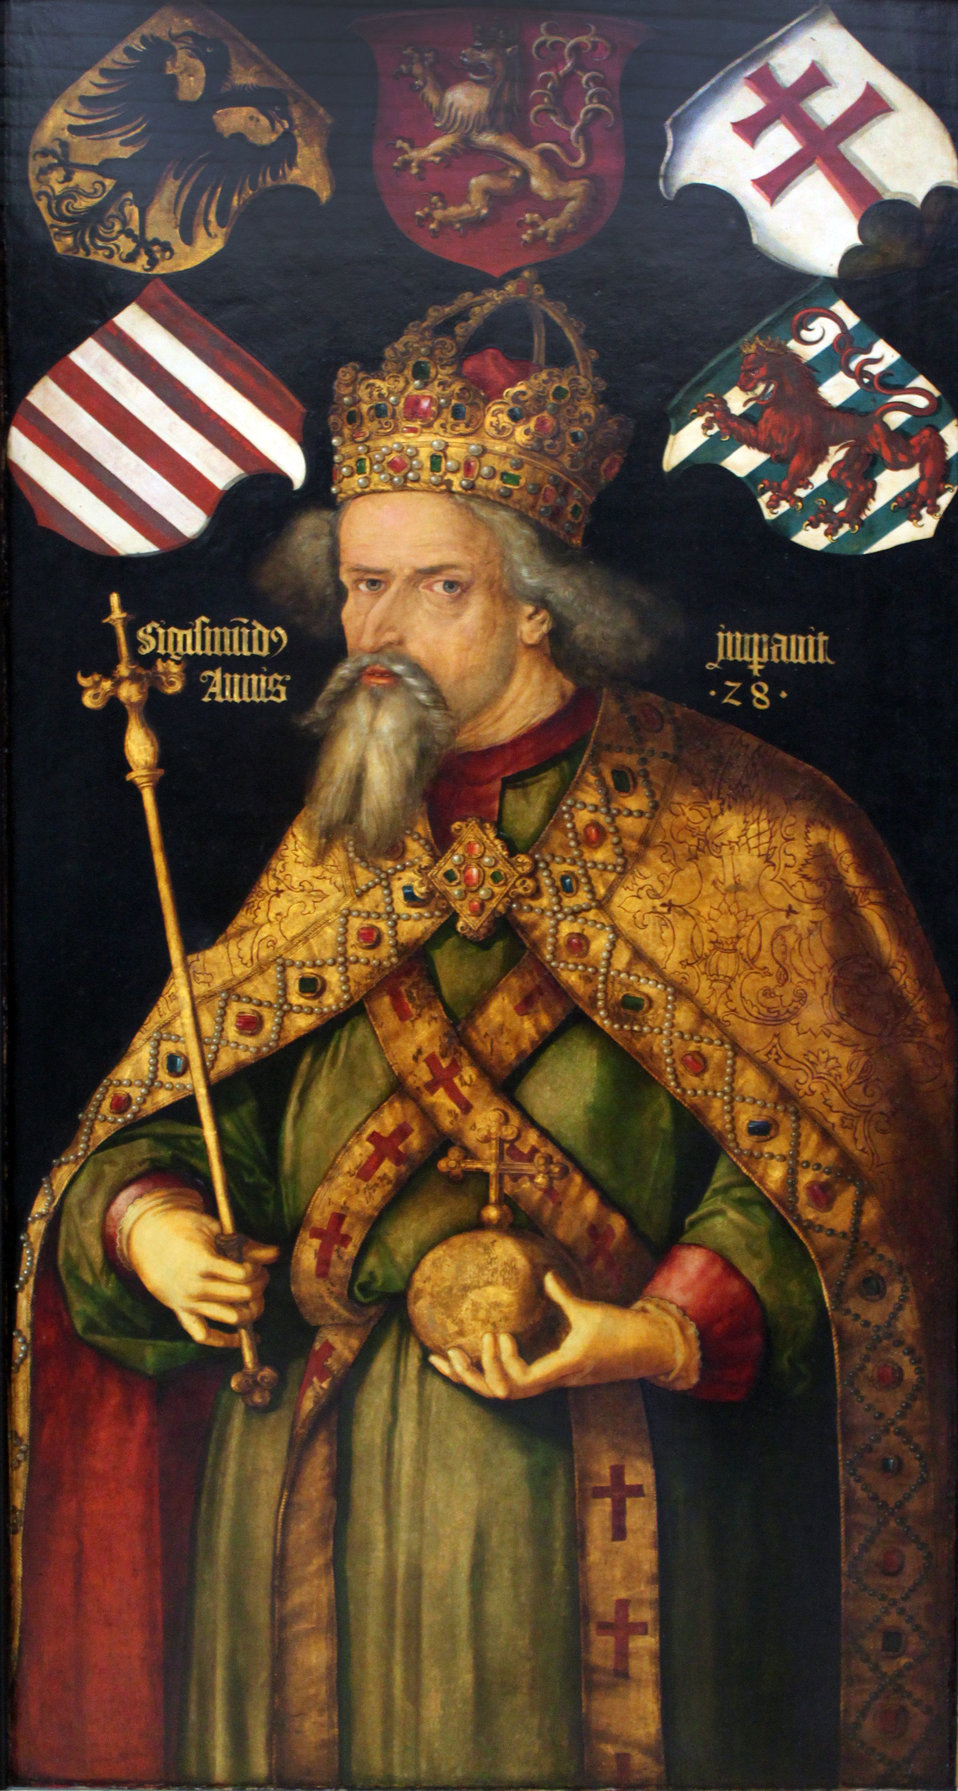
1512 Dürer Kaiser Sigismund anagoria